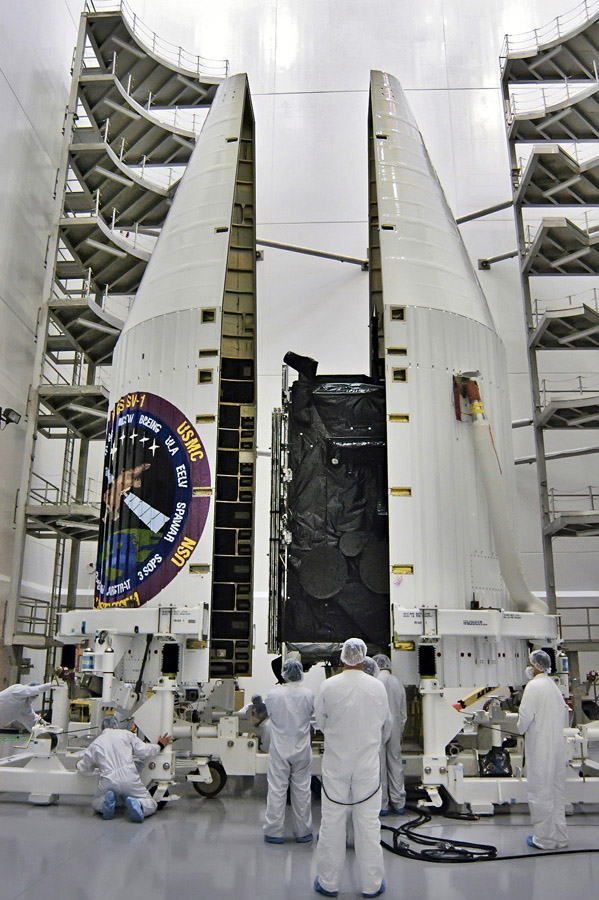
New satellite provides more power, better warfighter support

Assembly of the Wideband Global SATCOM Satellite took place at Boeing corporation facilities in California. Here, the satellite is being enclosed within the nosecone of the rocket that carried it into orbit.